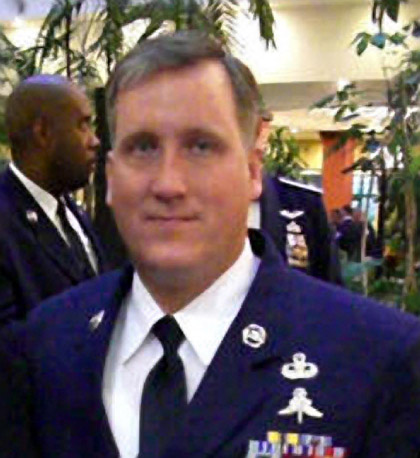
Pope officials remember fallen Airman

Tech. Sgt. William H. Jefferson Jr. died March 22 near Spaerwan Ghar, Afghanistan, of wounds he suffered when his vehicle encountered an improvised explosive device. He was assigned to the 21st Special Tactics Squadron at Pope Air Force Base, N.C.